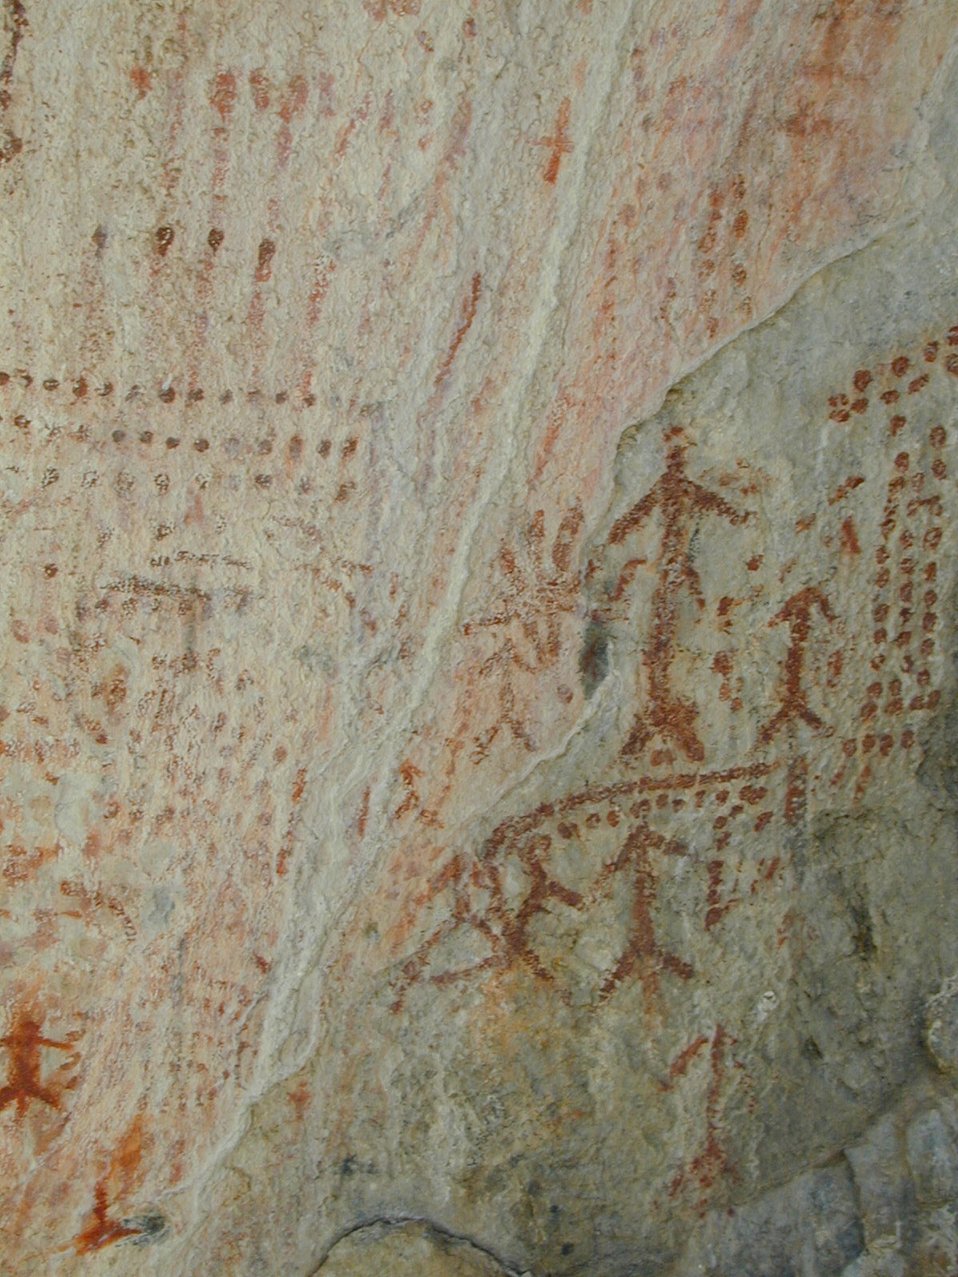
Petroglyphs Birch Creek Valley